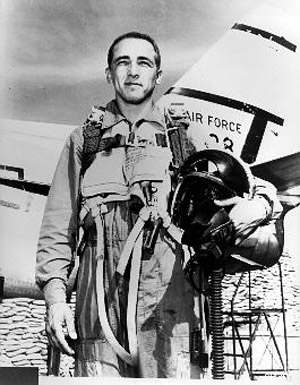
Col. Robinson Risner

Robinson Risner flew the F-105 Thunderchief during the Vietnam War. In 1965, he was captured by the North Vietnamese. During that time, Risner was the senior Air Force officer held prisoner in the infamous